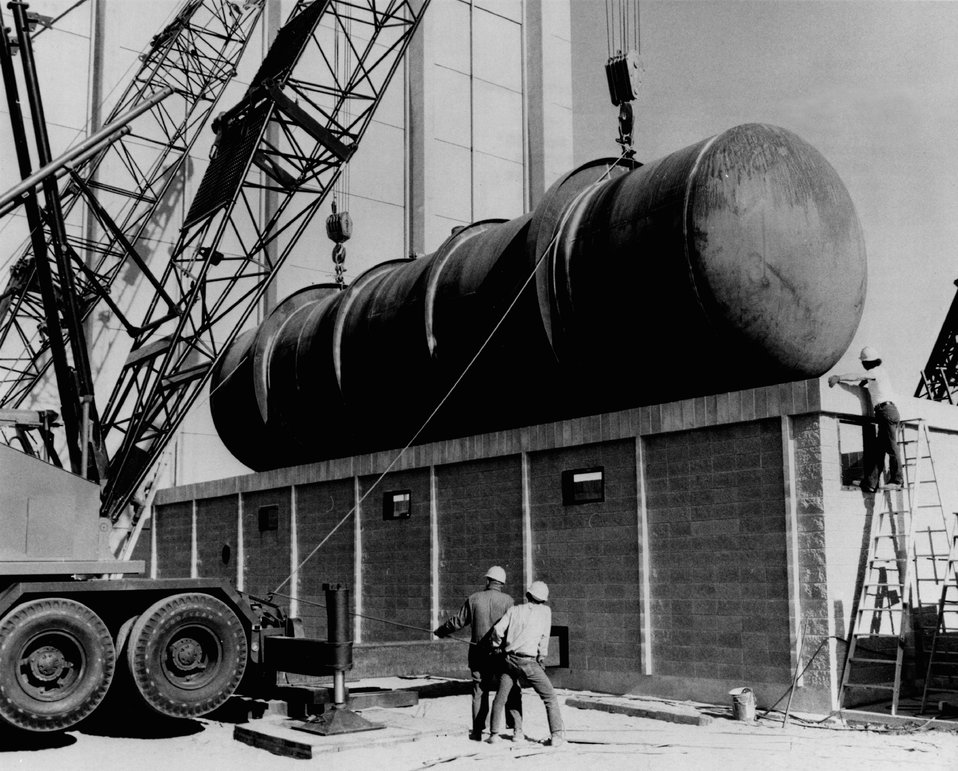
This 44-Ton vessel is eased into position at the High Temperature Sodium Facility at the AEC's Hanford site. The sodium storage tank 13' in diameter and 60' long, will be used in the testing program for the nation's liquid metal fast breeder reactor. Circa 1973.